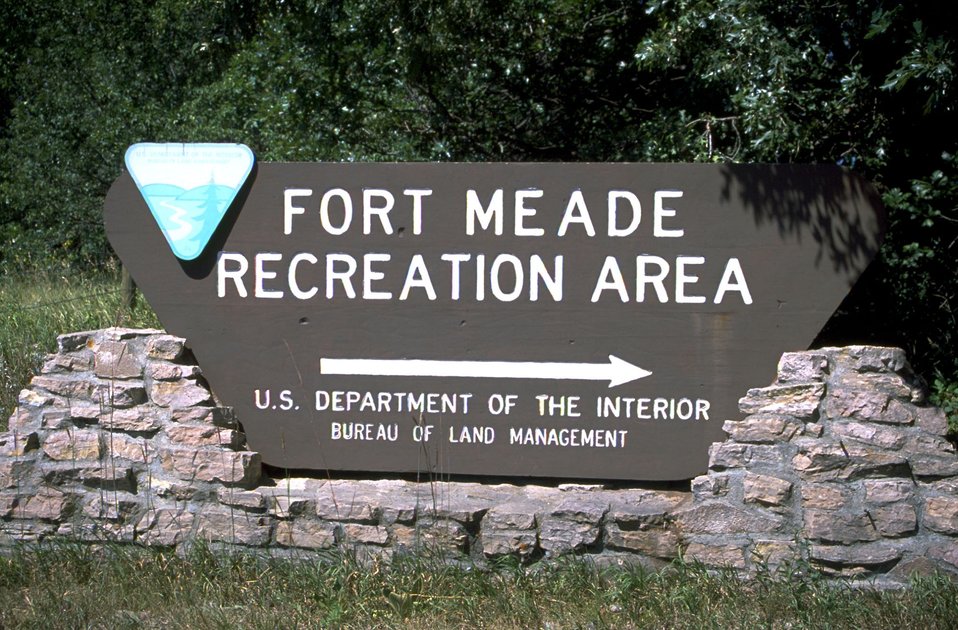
Entrance Sign to Fort Meade Recreation Area